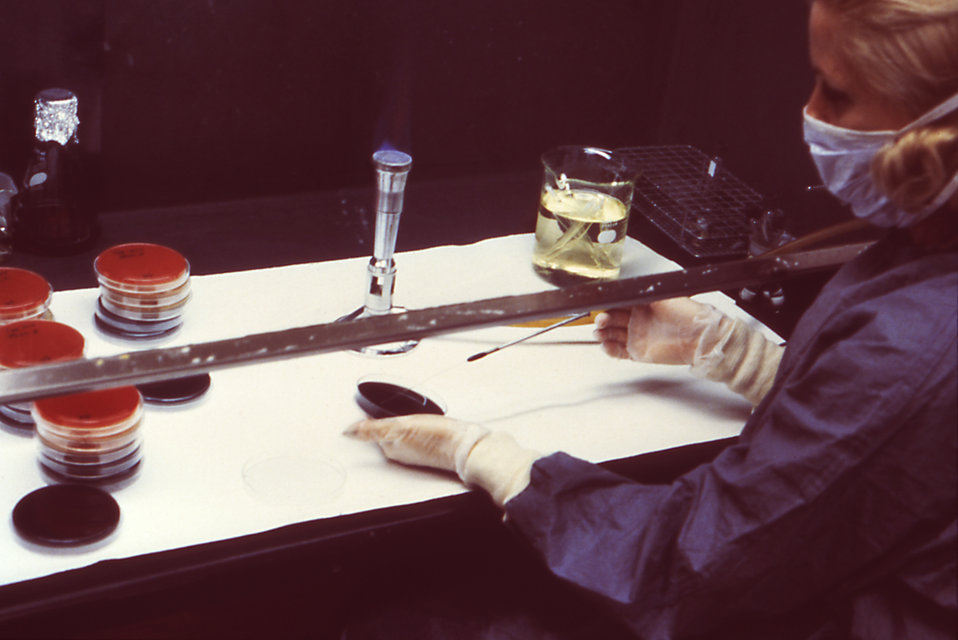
Here a laboratorian is inoculating charcoal yeast culture plates with a suspected Legionella pneumophilia inoculum.